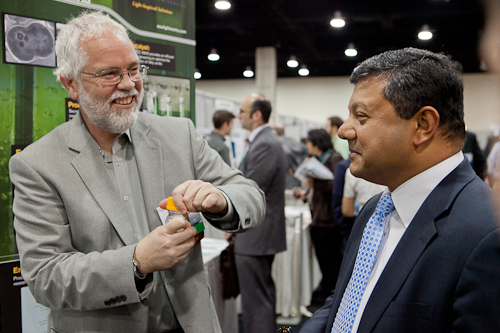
Turning Bacteria into Fuel

Willem Vermaas, a Professor at Arizona State University, explains to ARPA-E Director Arun Majumdar how ASU researchers grow fuel from fatty acids harvested from photosynthetic bacteria. This special bacteria is used for solar powered, highly efficient production of biofuels.